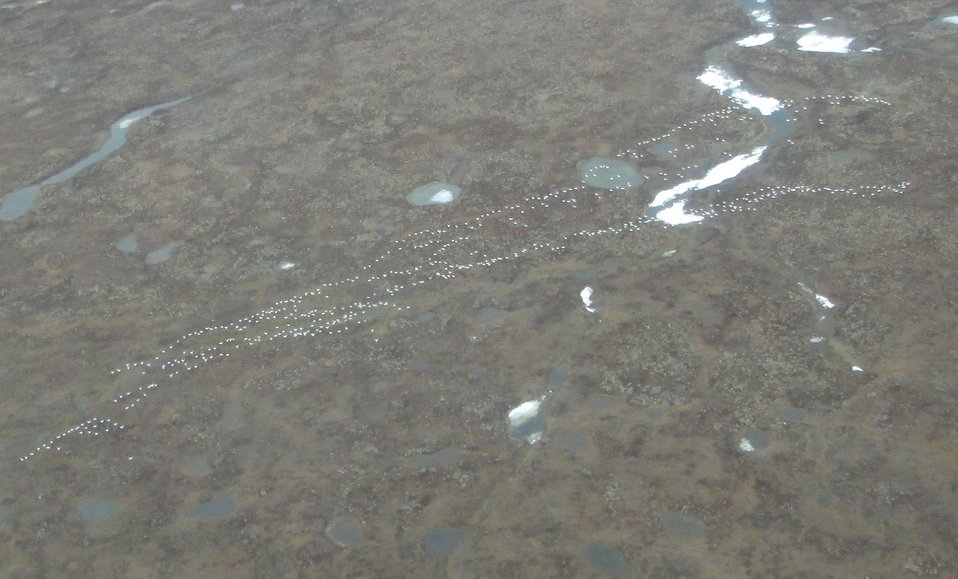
Snow Goose Telemetry

Many of the breeding Wrangel Island (located in northern Russia) snow geese winter in Washington State. During their fall/spring migrations they have been known to stop on Yukon-Kuskokwim Delta (YKD). In the winter 2013 the Washington Department of Fish & Wildlife attached transmitters to a handful of the wintering snow geese to monitor movements, stop over sites, etc. It is known that the birds use the YKD as a stop-over site but exact locations of use and size of the the flocks were unknown. In May of 2013 we flew a survey to document number of snow geese on the Yukon-Kuskokwim Delta and where they were found.
USFWS Yukon Delta NWR